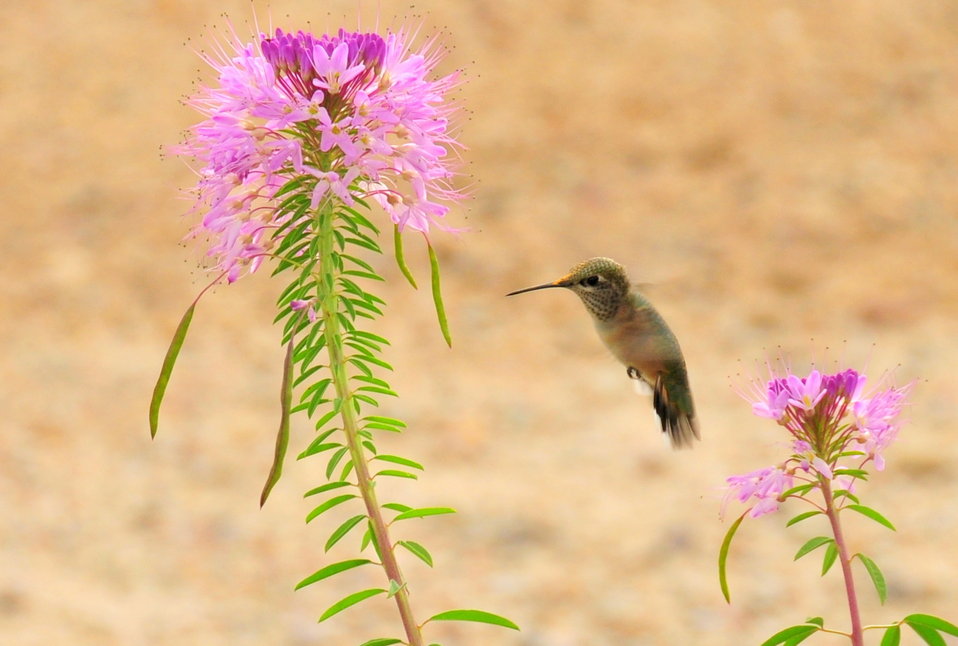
Rufous Hummingbird and Rocky Mountain Beeplant

A rufous hummingbird feeds on flowers of Rocky Mountain Beeplant on Seedskadee NWR.